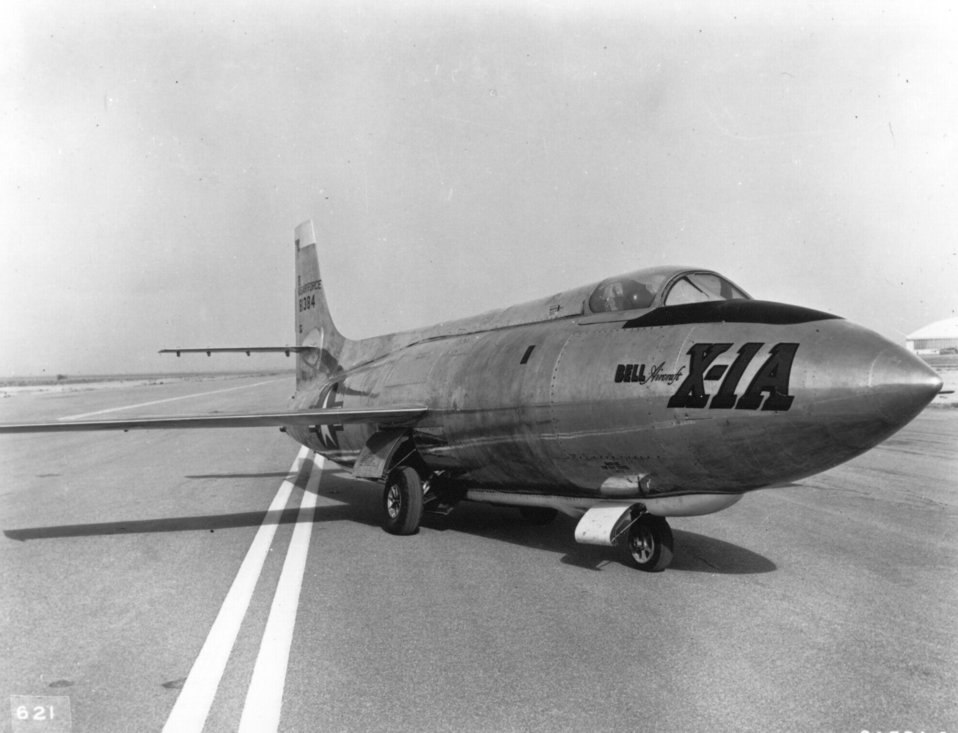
Bell X-1

On Oct. 14, 1947, the Bell X-1 became the first airplane to fly faster than the speed of sound. Piloted by U.S. Air Force Capt. Charles E.